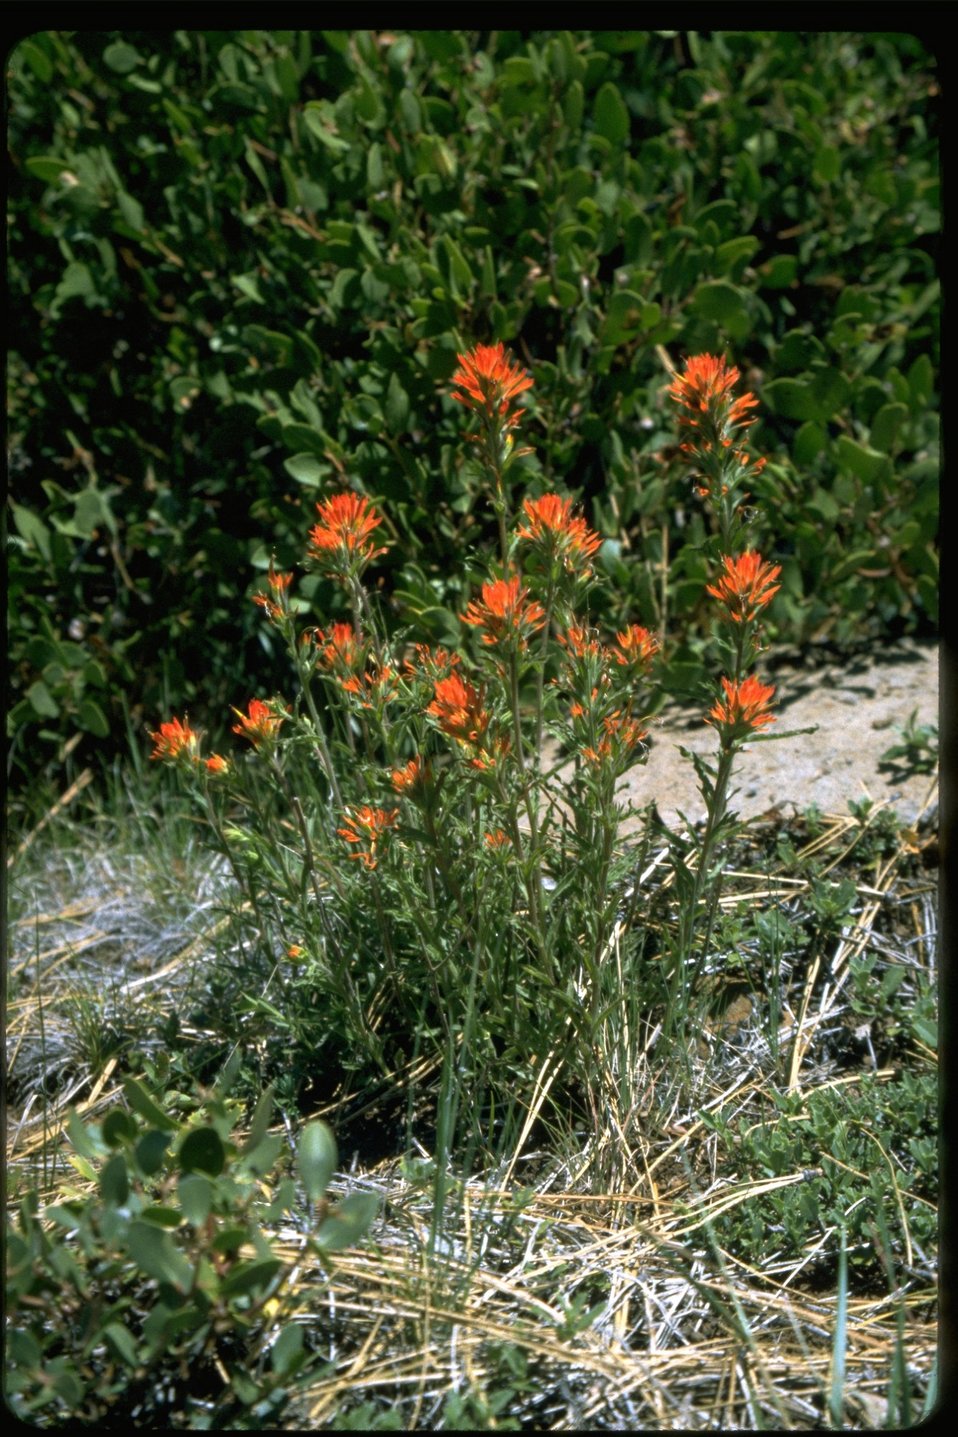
Medium long shot of Indian Paintbrush.